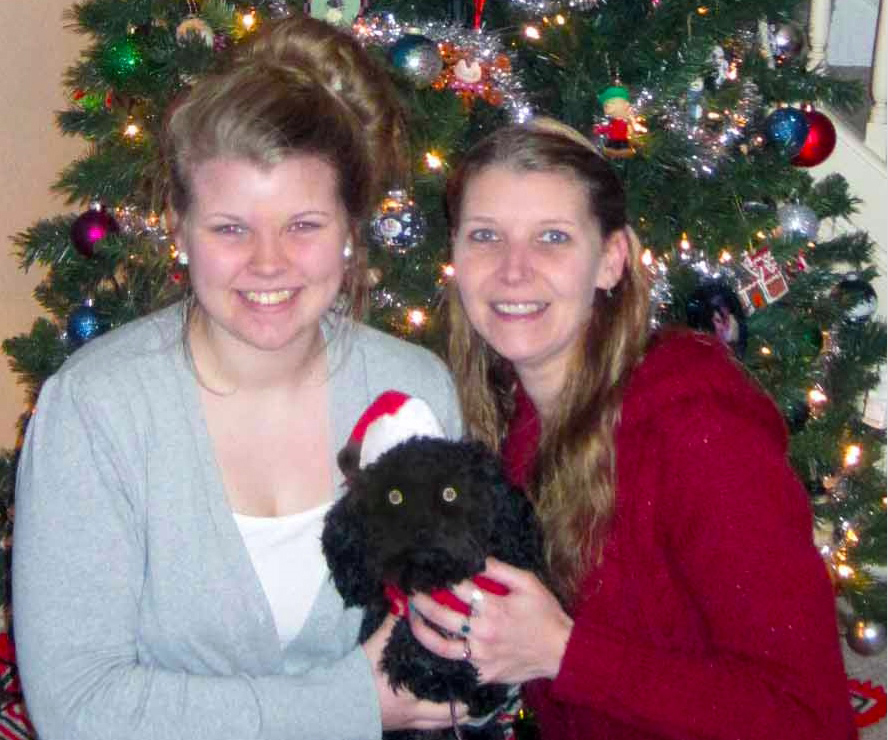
Misty Deanna Odysseus Allen

Misty Allen (right), her daughter Deanna and puppy Odysseus are ready for family and friends to share the holidays in their new home.